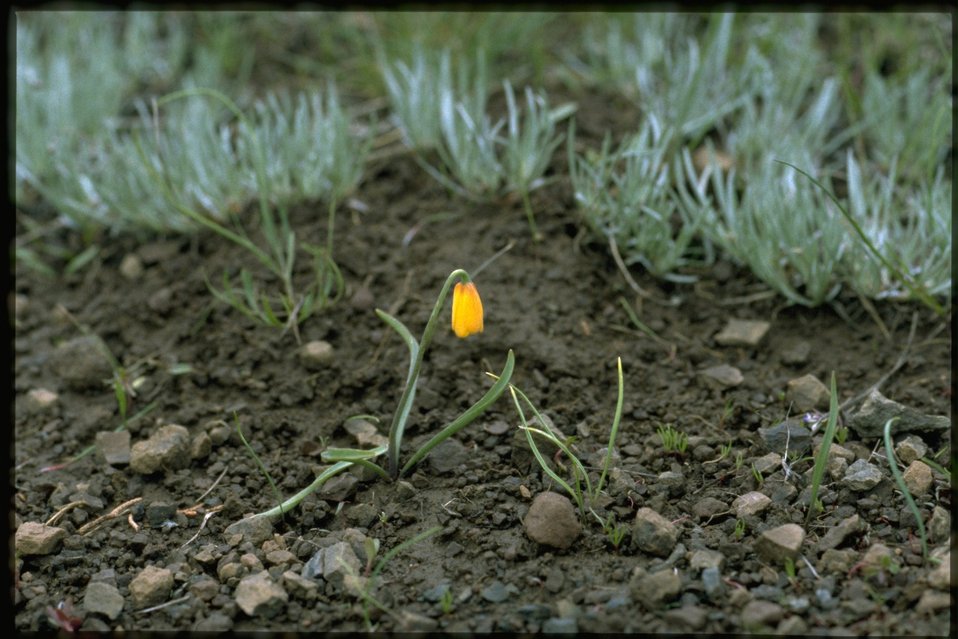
Farshot of Yellow Fritillary, Fritillaria Pudica, wildflower.